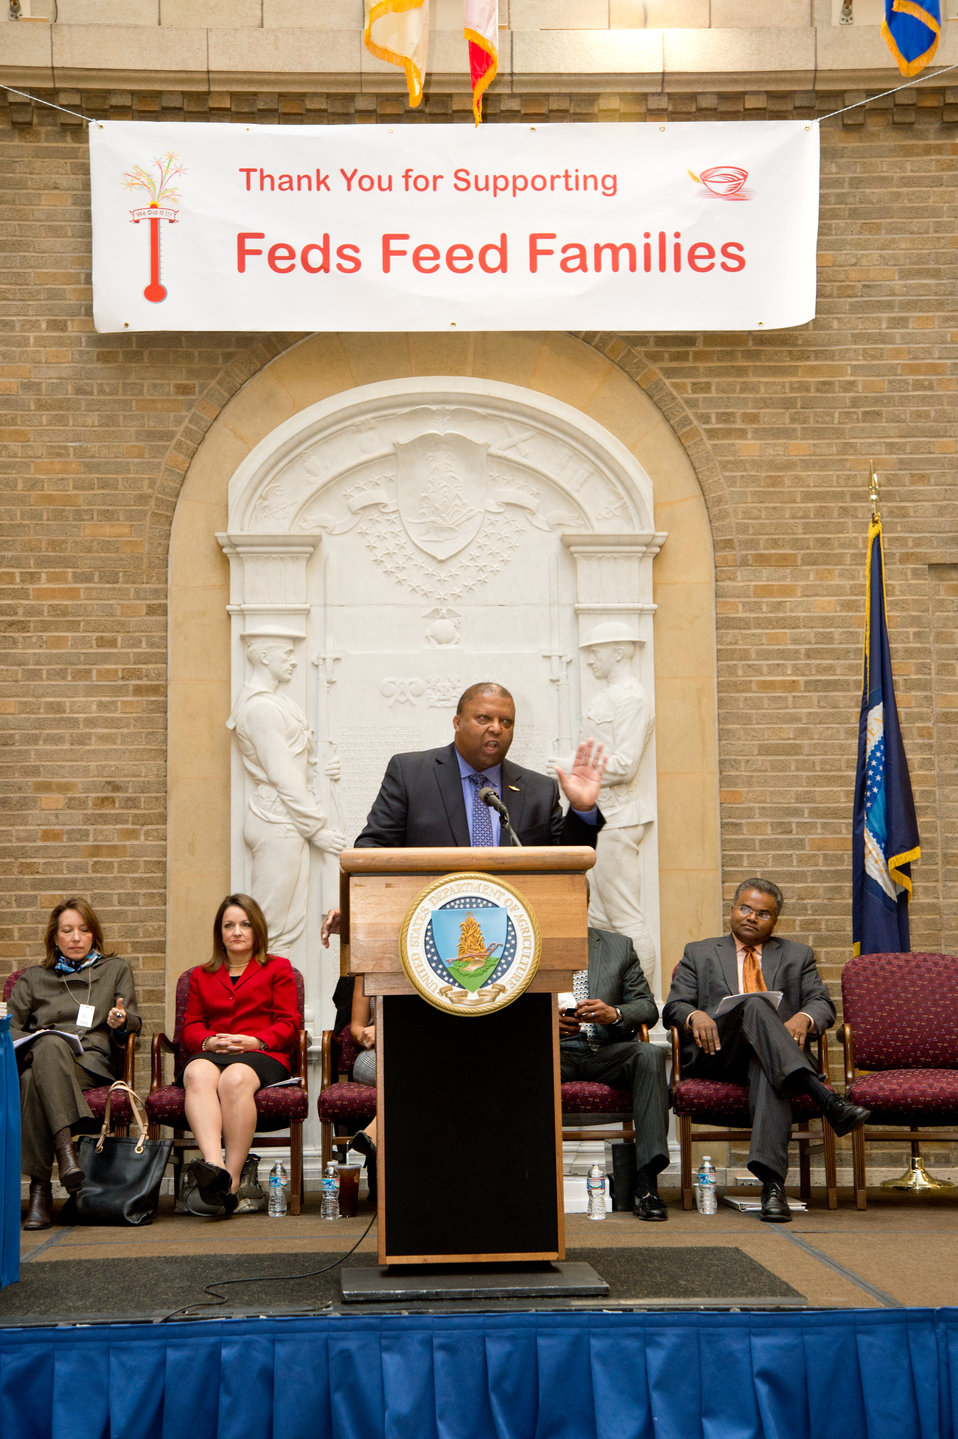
Douglas Keeler, Feds Feed Families National Program Manager, United States Department of Agriculture (USDA), Associate Deputy Administrator, Agricultural Marketing Service (AMS), Livestock, Poultry and Seed Division addresses employees and partner agencies at the USDA Feds Feed Families closing ceremony, on Wed., Nov. 13, 2013 in Washington, D.C. Federal employees nationwide stepped up the challenge of Feds Feed Families and gathered 9 million pounds of food for food banks across the nation and the National Capital Region for families in need setting an all time record high.